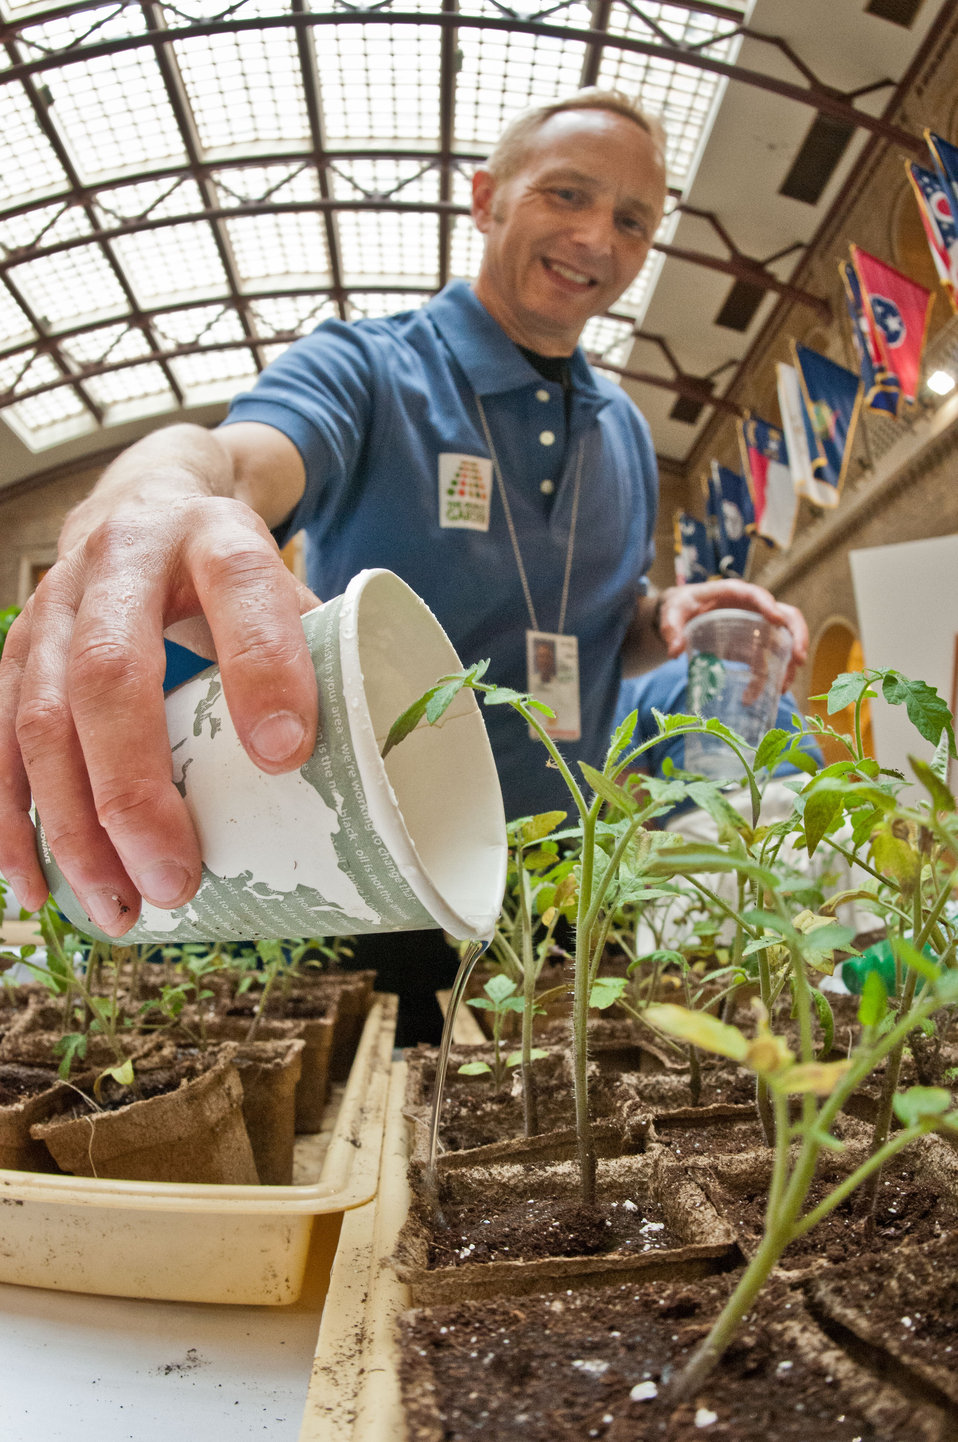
Agriculture's Animal and Plant Health Inspection Service volunteer Executive Master Gardner Richard Pacer waters recently transplanted seedlings during the People’s Garden distribution of ‘Abraham Lincoln” Tomato seedlings that the People’s Garden Initiative is distributing to USDA employees in celebration of the 150th Anniversary of the U.S. Department of Agriculture, on Tuesday, May 15, 2012 in Washington, D.C., on this day, 150 years ago, President Abraham signed the Department into existence during the Civil War. In 1923 the H.W. Buckbee seed company of Rockford, Illinois introduced an heirloom variety named in honor of Illinois’ Greatest Son – Abraham Lincoln. The plant produces large beefsteak tomatoes in about 90 days. Volunteer Executive Master Gardeners planted and cultivated more that 3,000 seedlings ranging in size from one inch to more than a foot tall, so people could choose the best ones to transport home and to stagger the harvest by selecting a small and large seedling. One of the hopes of this event is to share the joys of gardening and harvesting, as well as the opportunity to share your harvest in your community. Seed packets are being distributed to People’s Gardens worldwide.